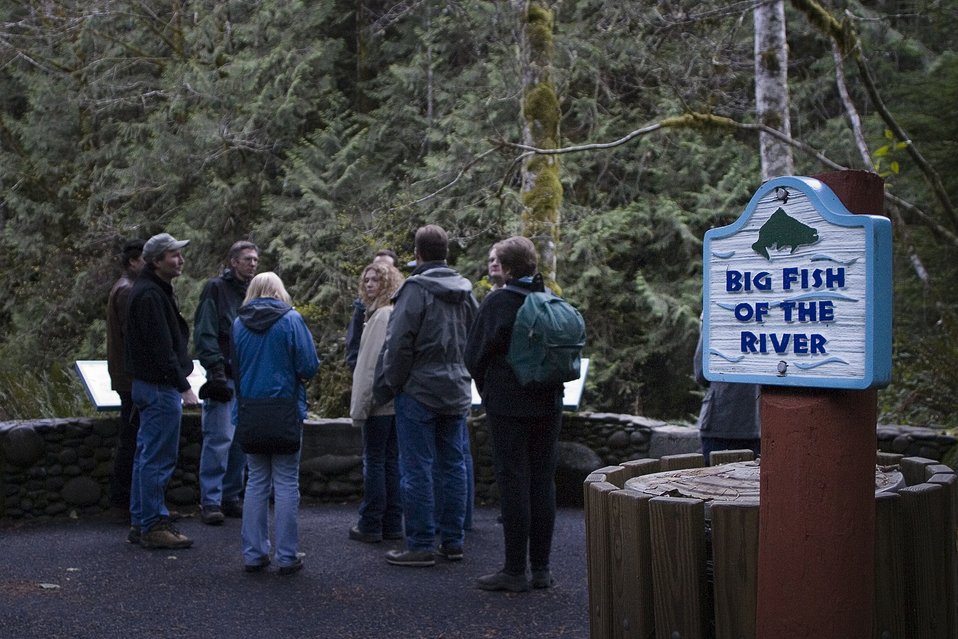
Wild Salmon Cente's Russian Kamchatka tour group stops at Cascadestream Watch’s Big Fish of the River interpretive station along the Salmon River at BLM's Wildwood Recreation Site.